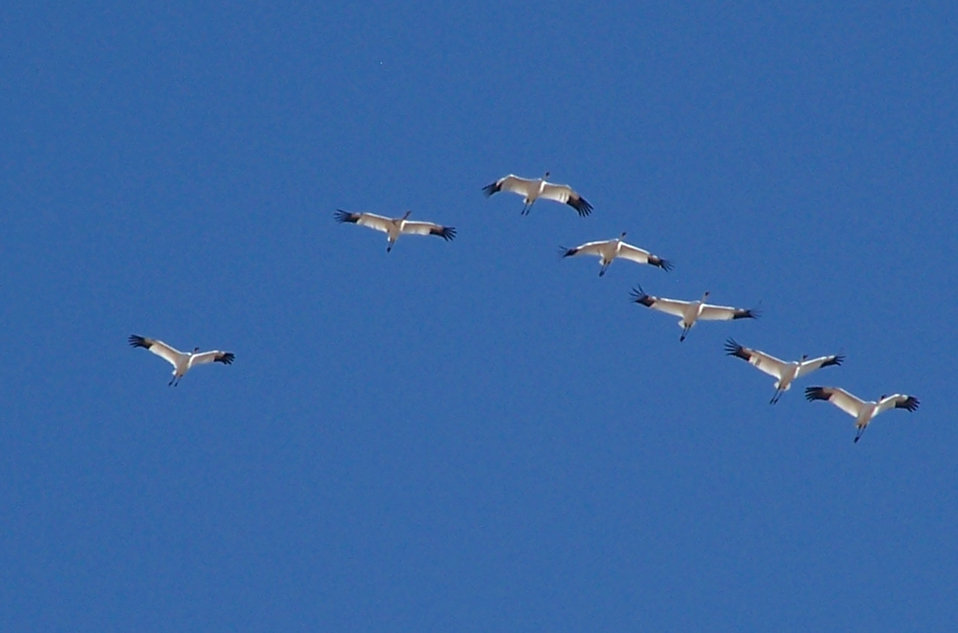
Whooping cranes in flight

Whooping cranes (Grus americana) fly in a 'V' formation. Whooping canes are endangered, with only one self-sustaining wild population, the Aransas-Wood Buffalo National Park (AWBNP) population. This population nests in Wood Buffalo National Park and adjacent areas in Canada, and winters in coastal marshes in Texas at the AWBNP.